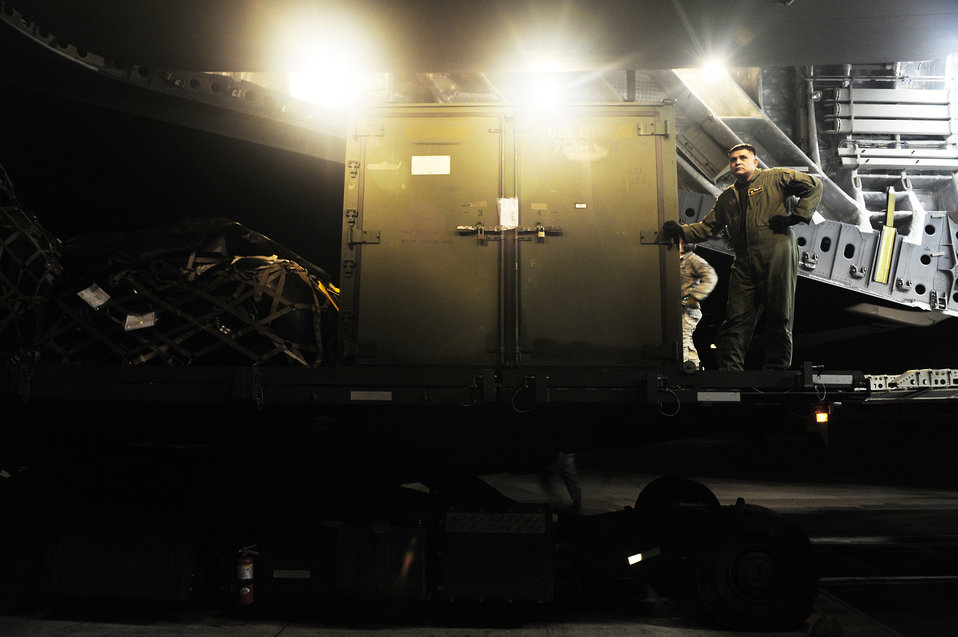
Haiti Relief Operations

Master Sgt. Michael Lang, a reservist from the 317th Airlift Squadron at Charleston Air Force Base, S.C., takes a quick break to look at the airport operations on the Toussaint L'Ouverture International Airport runway during relief efforts in Port-au-Prince, Haiti, Jan. 15, 2010.